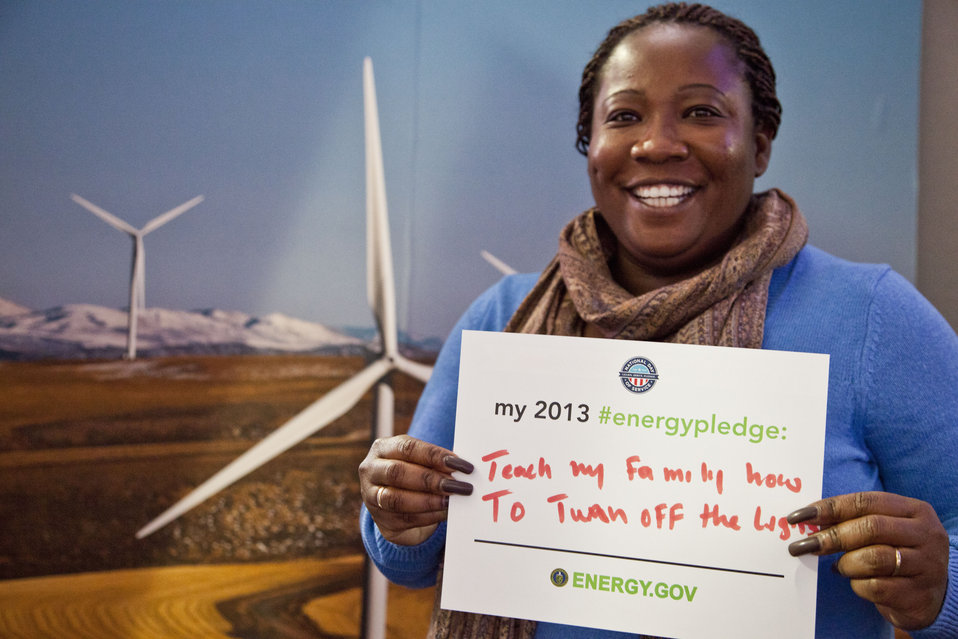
What's your #energypledge?